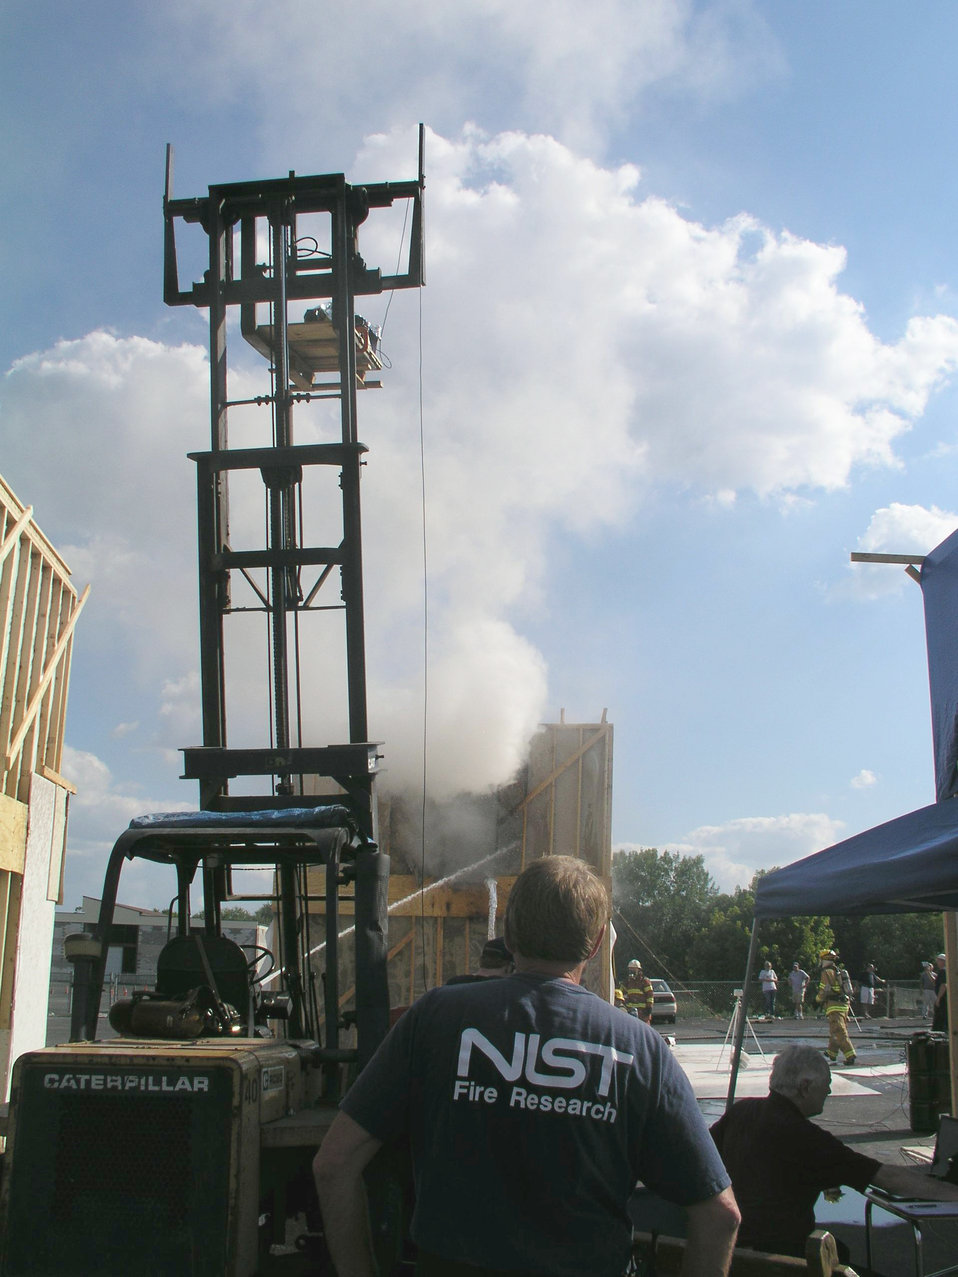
Fire research, structural collapse hazards, warning devices

NIST researchers working at the Delaware County (Pa.) Emergency Services Training Center in Sharon Hill are examining the behavior of fires under floors in residences, and testing devices that could give fire fighters warning of impending collapse. Sensors mounted on forklift capture thermal signature of walls and flow of heat out of test structure.